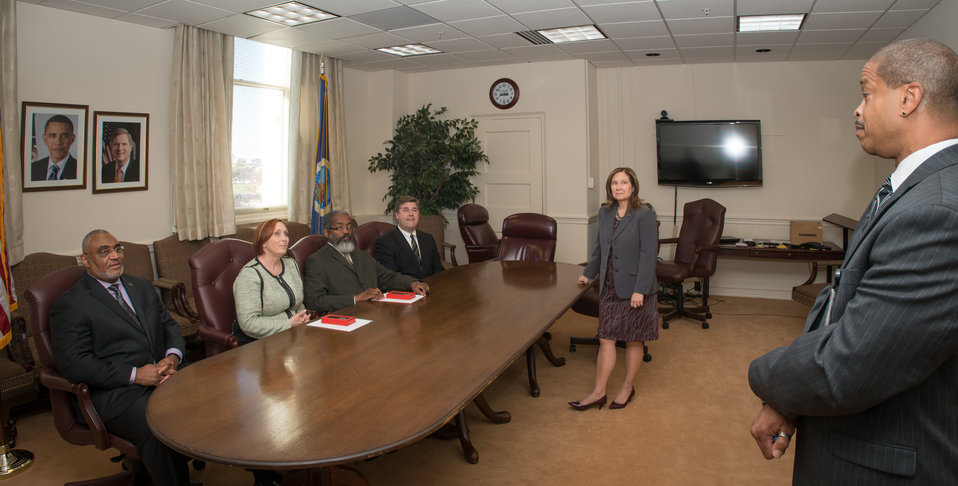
U.S. Department of Agriculture (USDA) Departmental Management (DM) Chief Human Capital Officer William P. Milton, Jr. (right-left) and USDA Office of Human Resources Management (OHRM) Provost Karlease Kelly speak about the relationship between USDA and Federal Managers Association (FMA) with the signing of the Memorandum Of Understanding (MOU) on Wednesday, Nov. 21, 2013 at USDA headquarters in Washington, D.C. At the table are (right- left) FMA Executive Director Todd V. Wells, USDA Assistant Secretary for Administration Dr. Gregory Parham, FMA National President Patricia J. Niehaus, and DM Deputy Assistant Secretary for Administration Malcom Shorter.